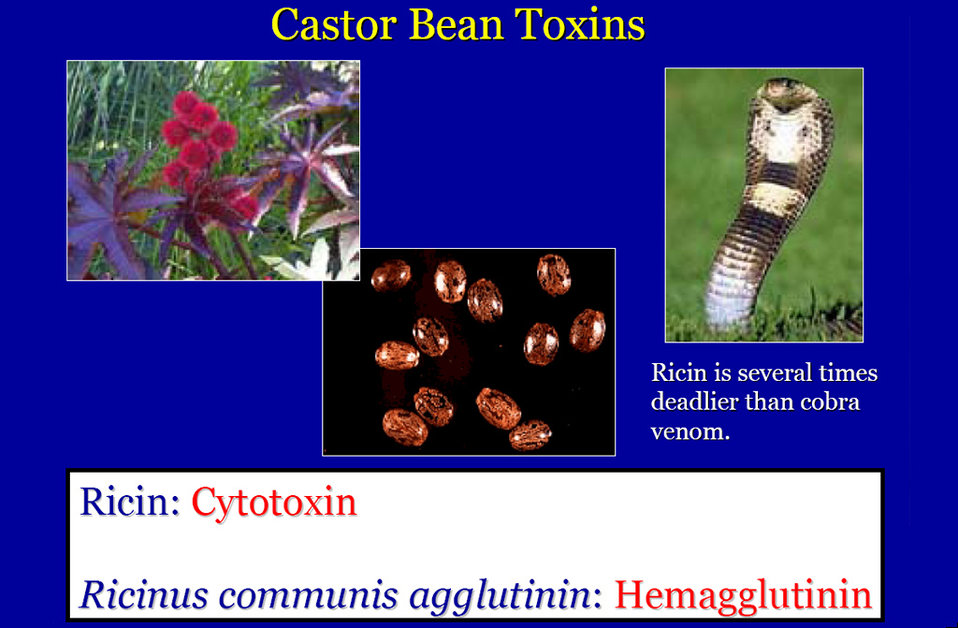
This presentation highlights the history, chemistry, and uses of ricin, a highly toxic poison made from castor beans.